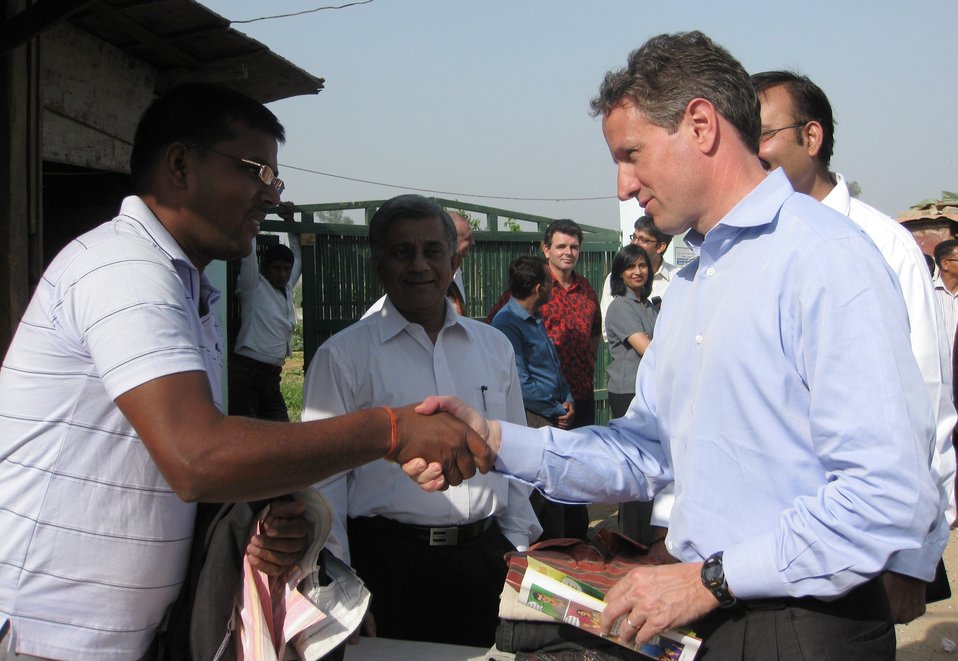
Secretary Geithner in India, 4/6/10

Secretary Geithner visited a storefront in Samalkha village outside Delhi, India that offers mobile banking services to its customers. Here, Geithner is talking to a washerman, who is a mobile banking customer.